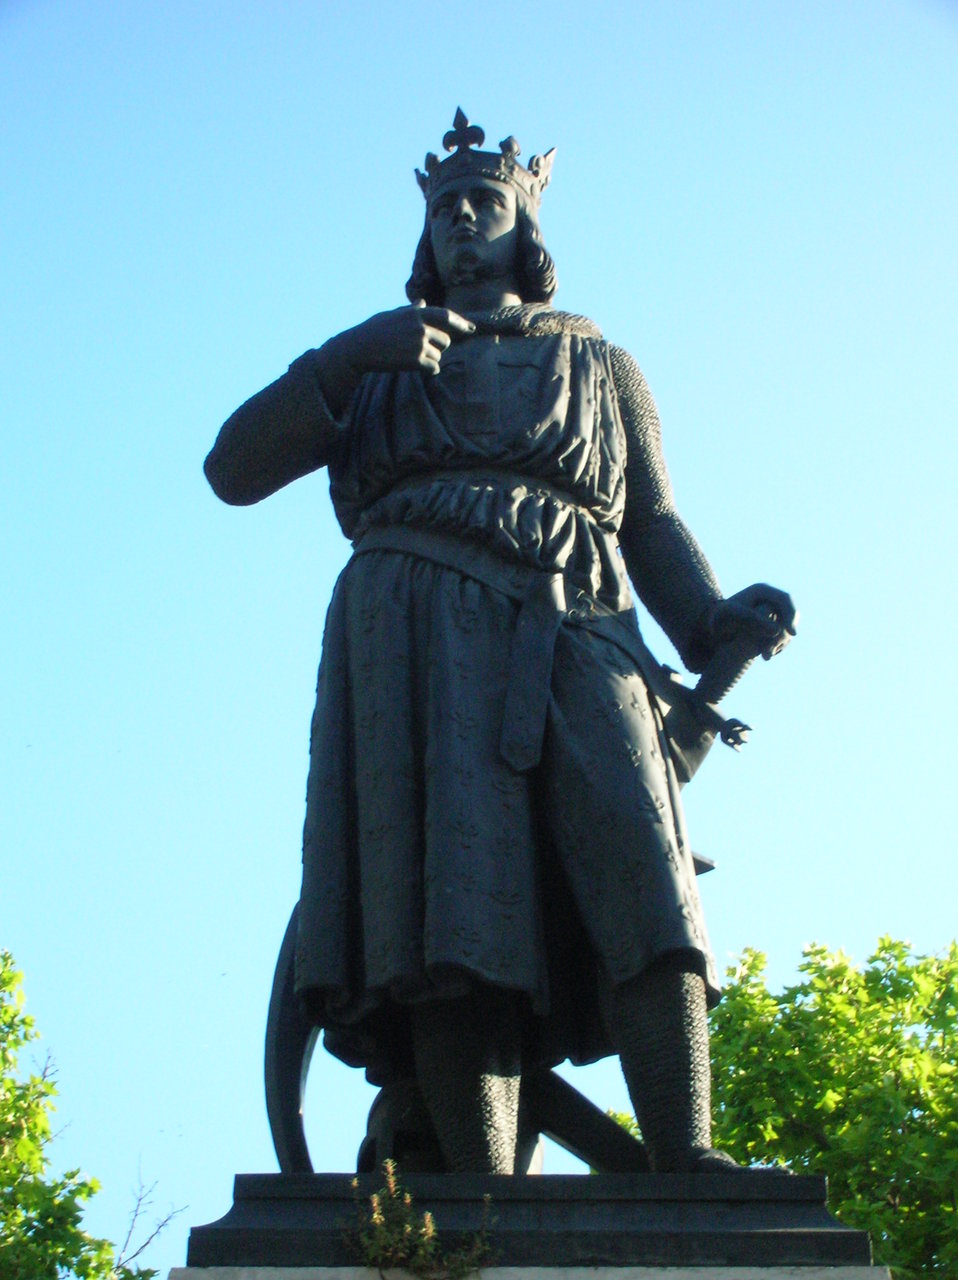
Saint-Louis statue-Aigues-Mortes